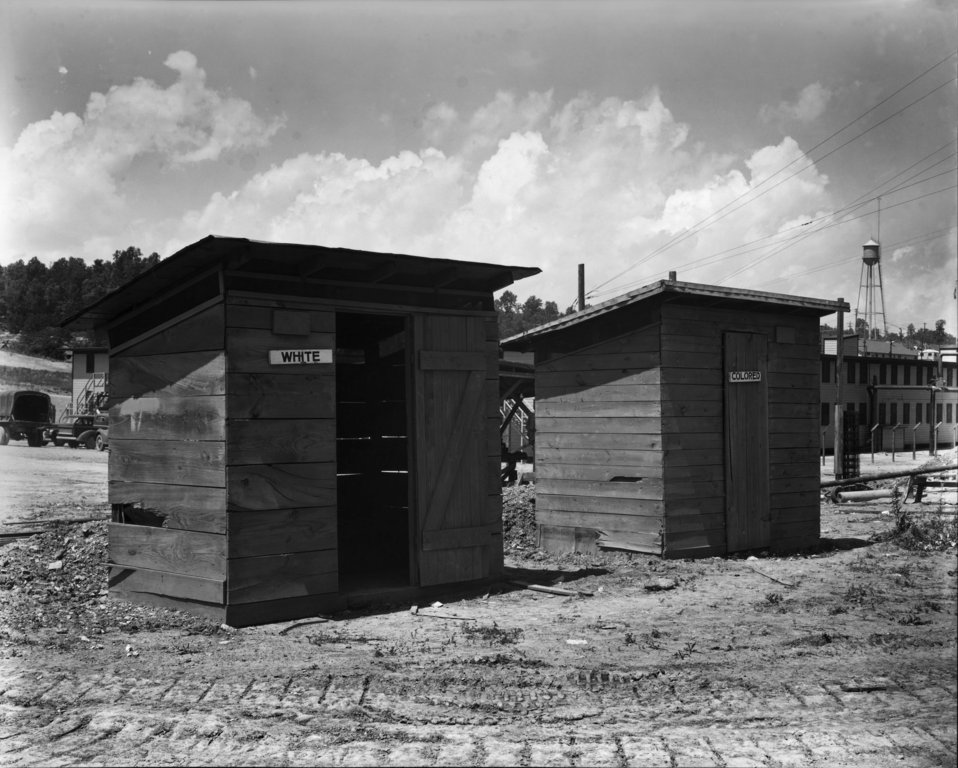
Outdoor Privies Oak Ridge

X10-14 DOE photo by Ed Westcott Outdoor Privies Oak Ridge Tennessee 1943